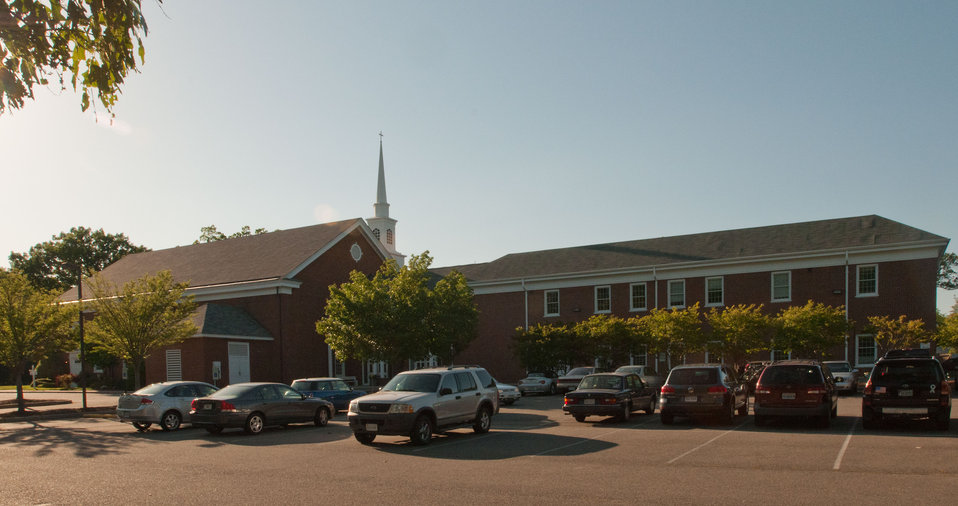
Fall Line Farms pick-up point at Bon Air United Methodist Church, in Richmond, VA, on Thursday, May 5, 2011. Traditional food cooperatives provide identical orders. This is one of several pick-up points in the Richmond area. This local food hub offers a wide variety of household food staples and specialty items. Members can pick their customized orders from an ever changing inventory of fruits, vegetables, meats, soaps, eggs, cheeses, flowers, honey, pastas, sauces, syrups, baked goods, mushrooms, flour and grains. Suppliers post what they have on a Lulus Local Food online listing and customers can make their selection. Then every Thursday suppliers team up with other suppliers to deliver orders to, one of several pick-up points, designated by the customer in or around the Richmond area.